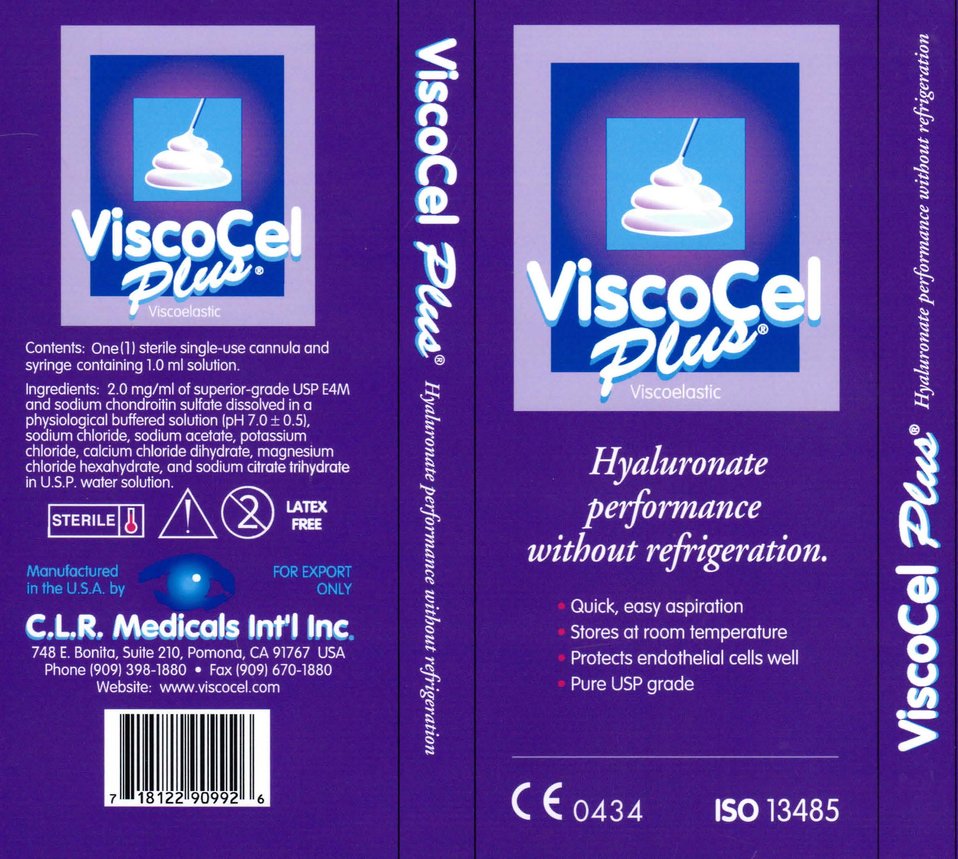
Viscocel Plus Artwork